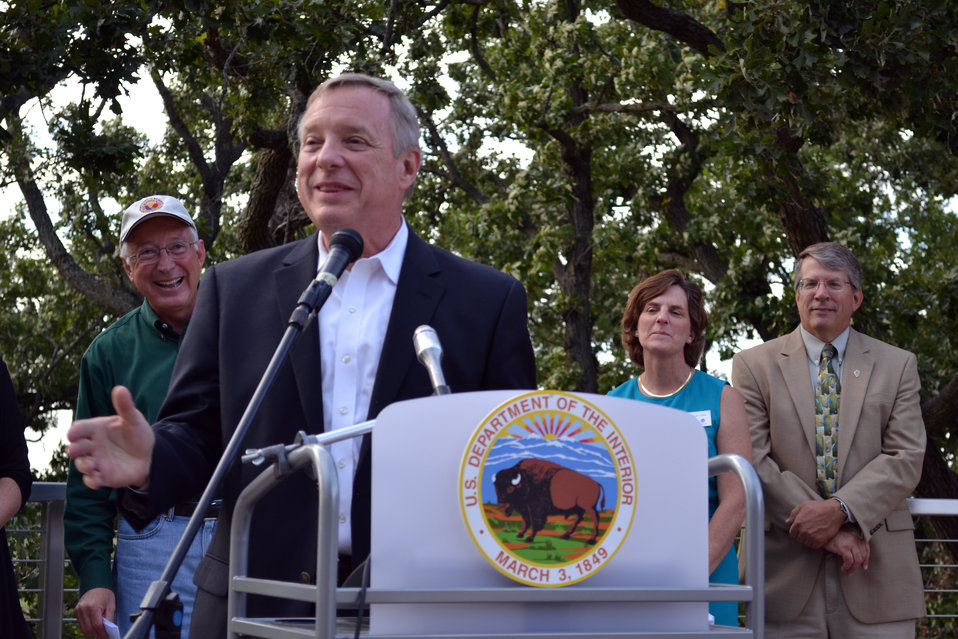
Senator Dick Durbin was proud to join his long-time colleague, Secretary Salazar in celebrating the announcement of Hackmatack National Wildlife Refuge.